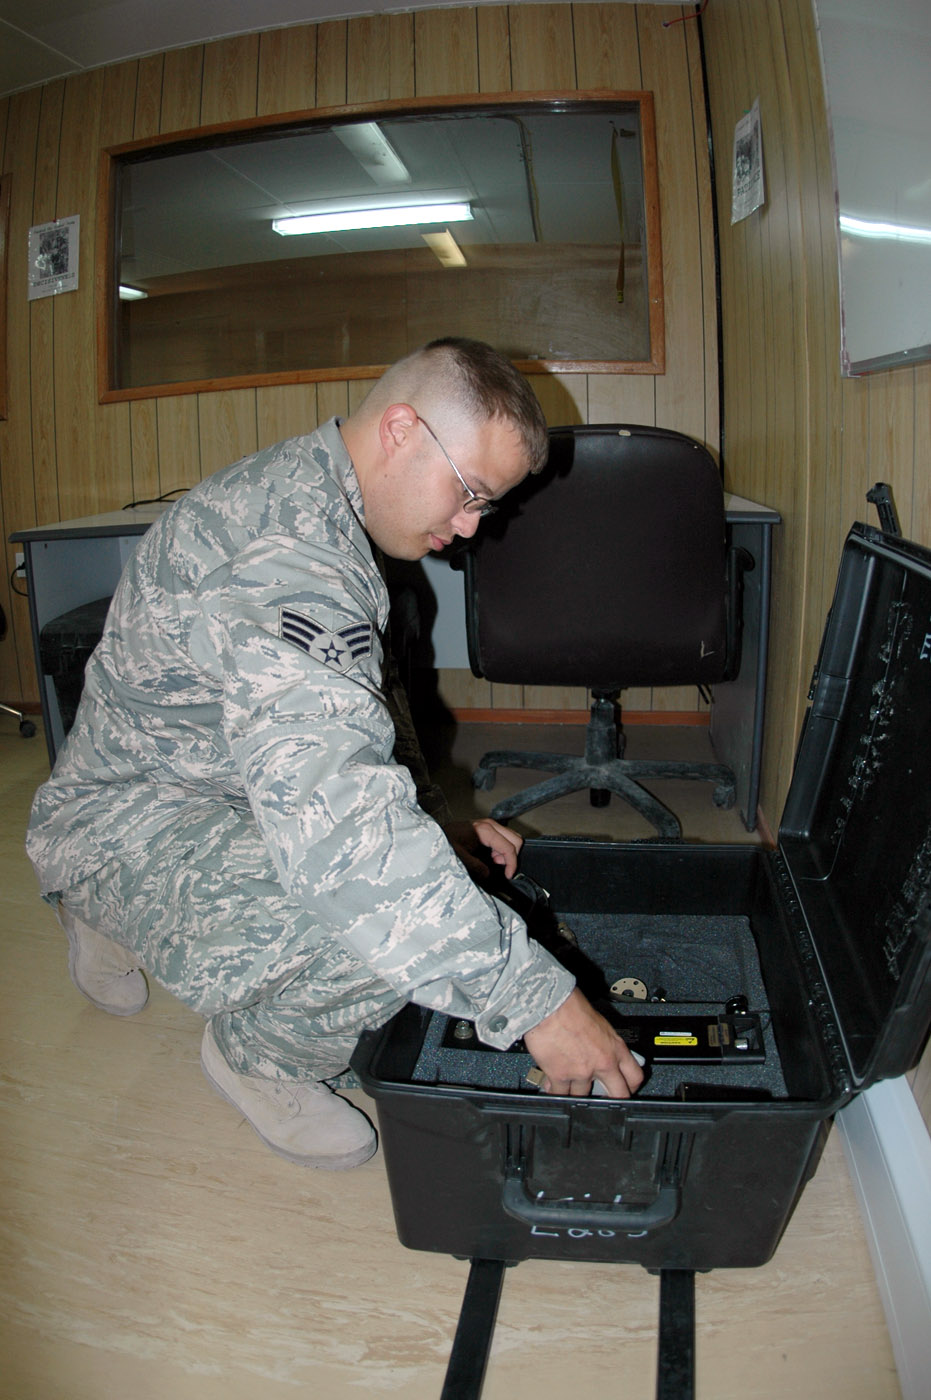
Lives depend on effective communication

Senior Airman Matthew Madsen inspects a Remotely Operated Video Enhanced Receiver or ROVER. ROVER kits include antennas that feed real-time full-motion video from aircraft to ground forces and radios for them to exchange information. ROVERs increase the communication ability by reducing talk-time required to get the aircrew's eyes on target. Airman Madsen is a maintenance operations controller with the 704th Expeditionary Support Squadron at Fort Hood, Texas.